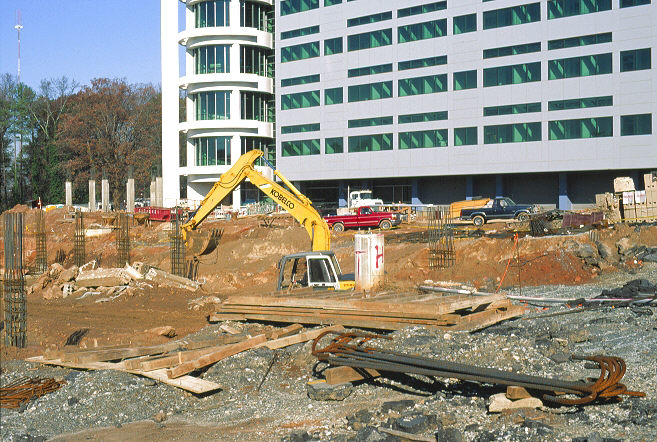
Building 17 and construction site for south parking deck, CDC Roybal Campus.